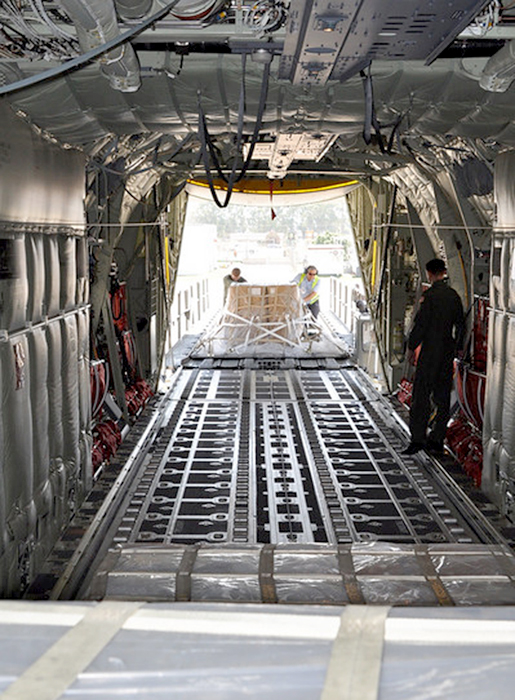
Ramstein Airmen, C-130s deliver supplies to Russia

Senior Airman Steve Baird III and a Spanish employee from InterJet, load a pallet of firefighting equipment onto a C-130J Super Hercules Aug. 12, 2010, at Naval Station Rota, Spain. NAVSTA Rota sent nearly $20,000 of equipment to help Russia control and extinguish wildfires, save lives, homes, infrastructure, and natural resources. Airman Baird is a loadmaster from the 37th Airlift Squadron at Ramstein Air Base, Germany.